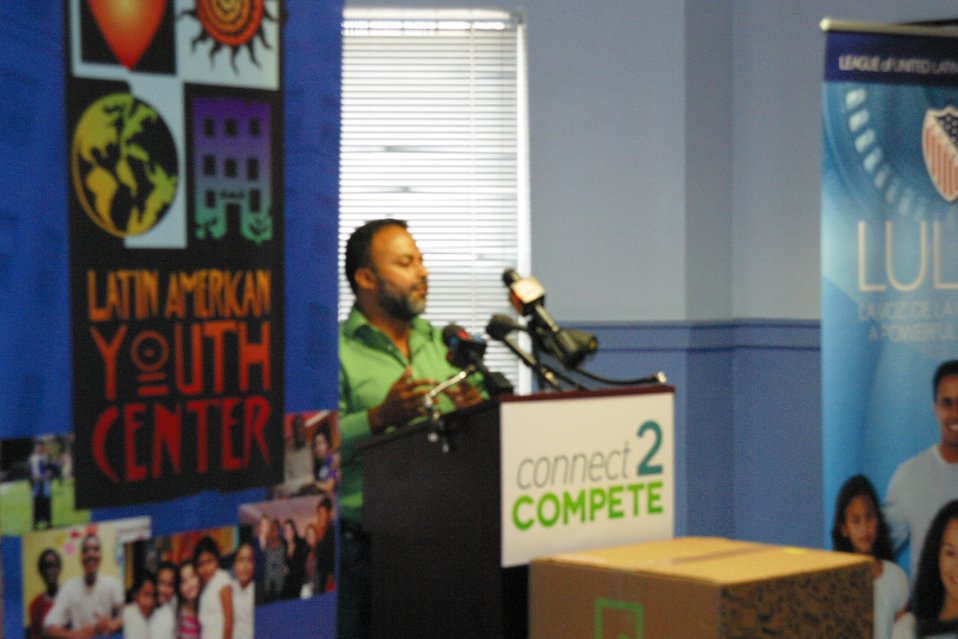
Connect 2 Compete: LULAC 8.7.12

Speaker at the event discussing his experiences... and how his love of computers and technology helped him get to his current position... if it wasn't for public private partnerships like Connect to Compete working with Redemtech.